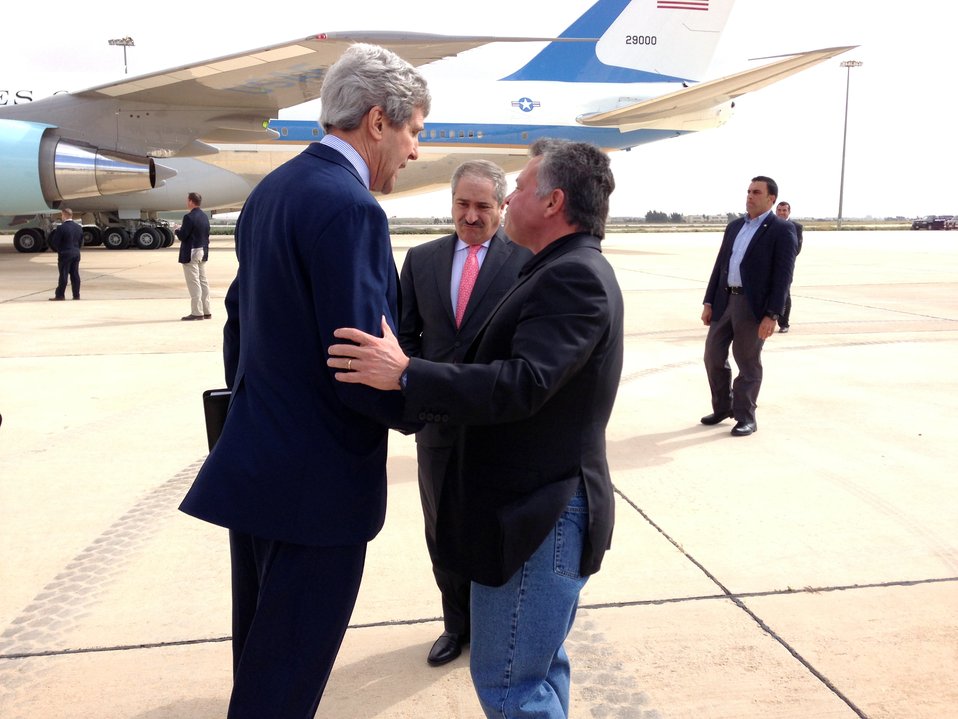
Secretary Kerry and Jordan's King Abdullah Chat as Air Force One Departs Jordan

U.S. Secretary of State John Kerry and Jordan's King Abdullah II chat as Air Force One departs Amman, Jordan on March 23, 2013.